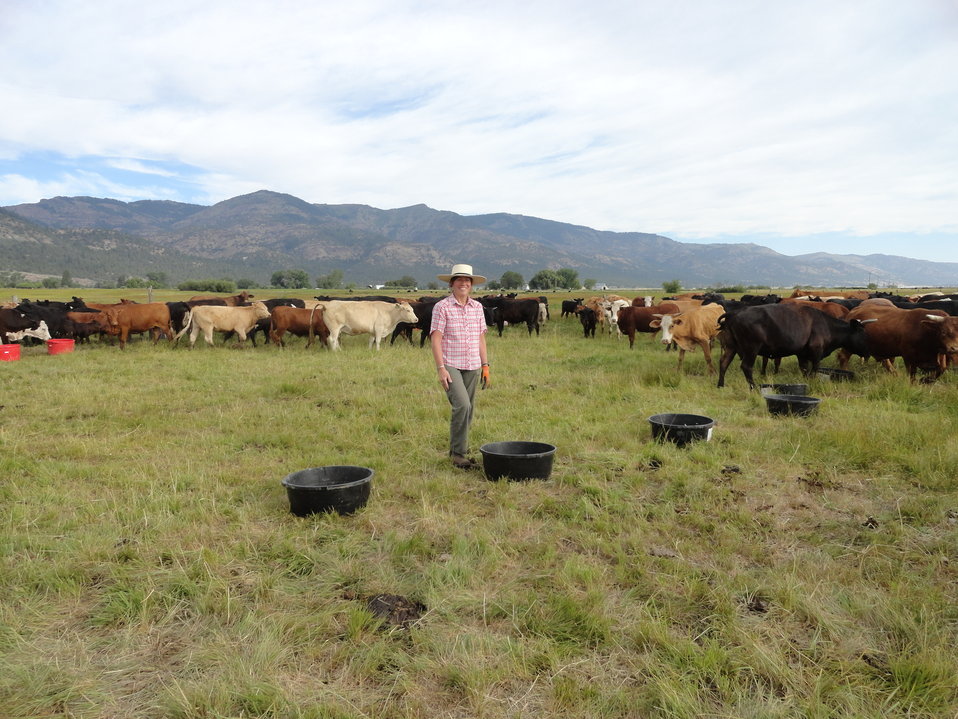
Livestock for Landscapes training - cows eat weeds!